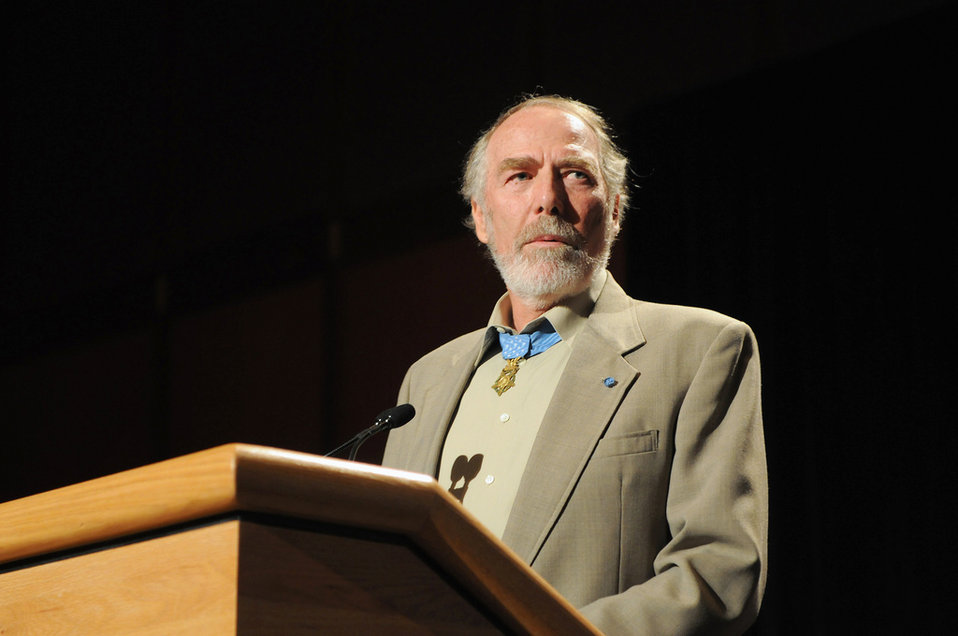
Leadership key to tackling suicide

Retired Army Maj. Drew Dix tells guard members that leadership at all levels is key to cutting the spike in servicemember suicides Aug. 8, 2010, during the 39th annual conference of the Enlisted Association of the National Guard of the United States, in St. Louis, Mo. Major Dix is a Medal of Honor recipient.